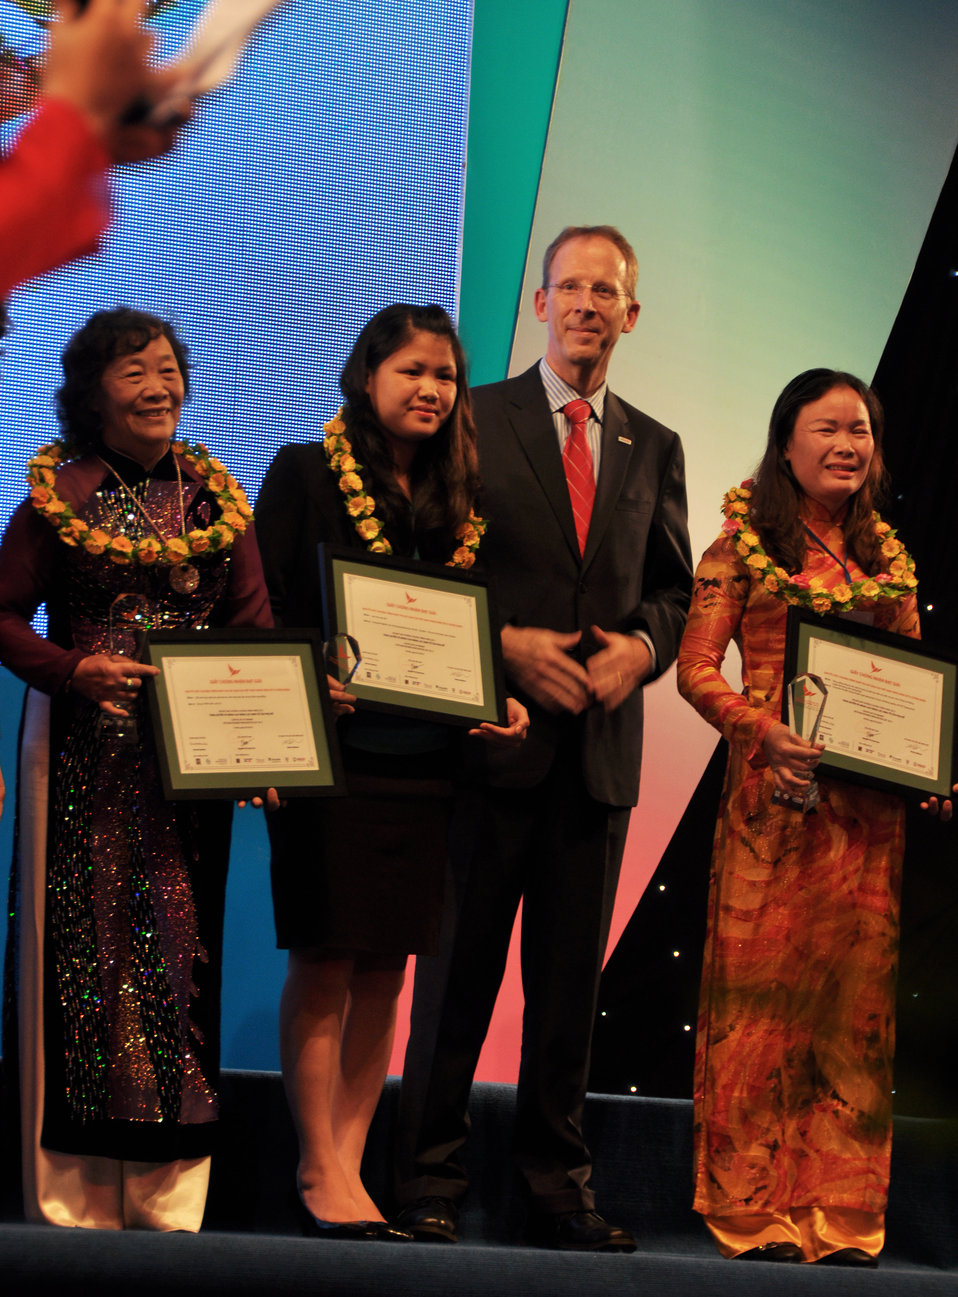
Vietnam Women Innovation Day 2013

USAID Mission Director Joakim Parker awards prizes to winning innovative proposals.

Hanoi, October 2, 2013.